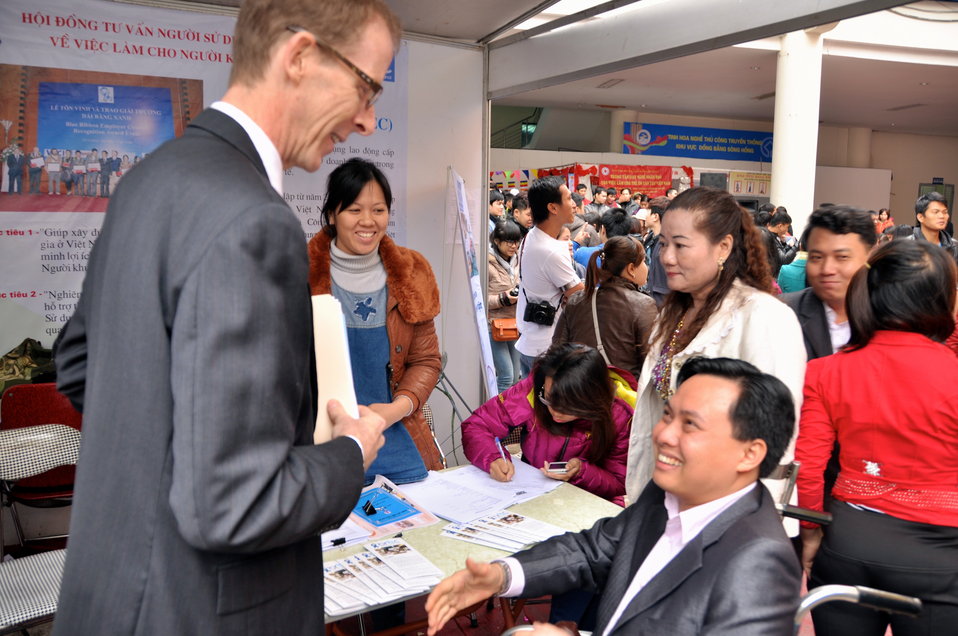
USAID Mission Director Joakim Parker joins celebration of International Day of Persons with Disabilities in Hanoi, Vietnam

December 2, 2012